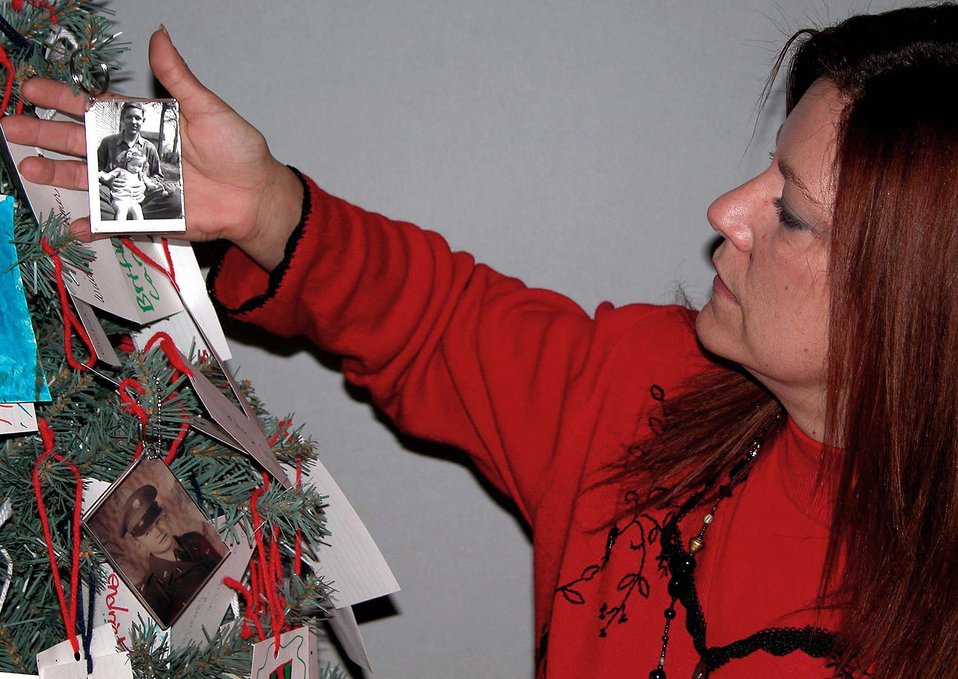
Lightless holiday tree honors missing

WASHINGTON -- Retired Army Master Sgt. Peggy Marish-Boos, creator of the POW/MIA holiday tree, holds a picture of Army Cpl. Samuel C.